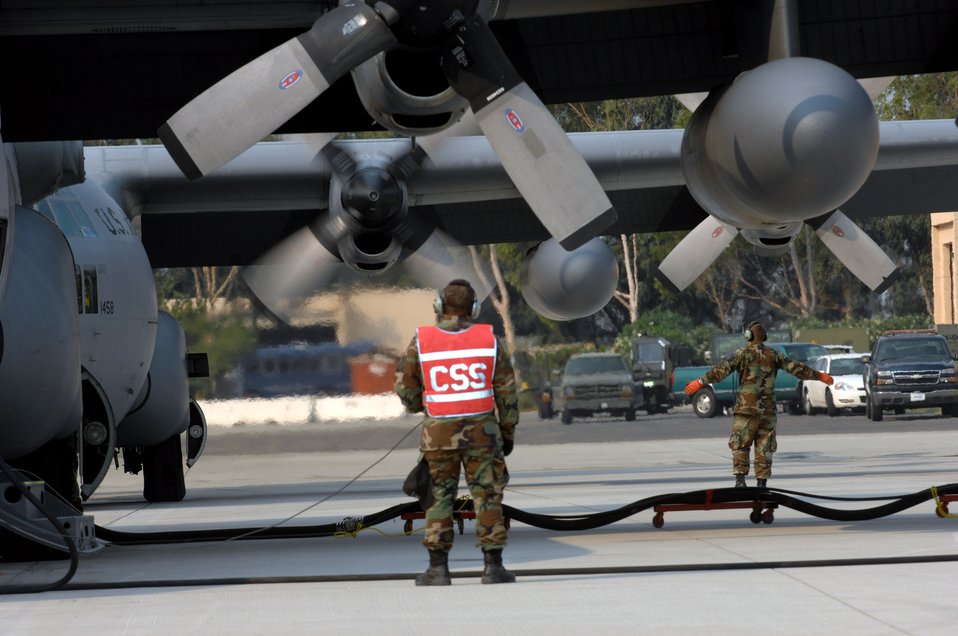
Guard, Reserve aid in California firefighting efforts

Air Force Reserve Command and Air National Guard Airmen prepare C-130 Hercules aircraft for take off to support the California firefighting efforts Oct. 25 at Channel Islands Air National Guard Base, Calif.